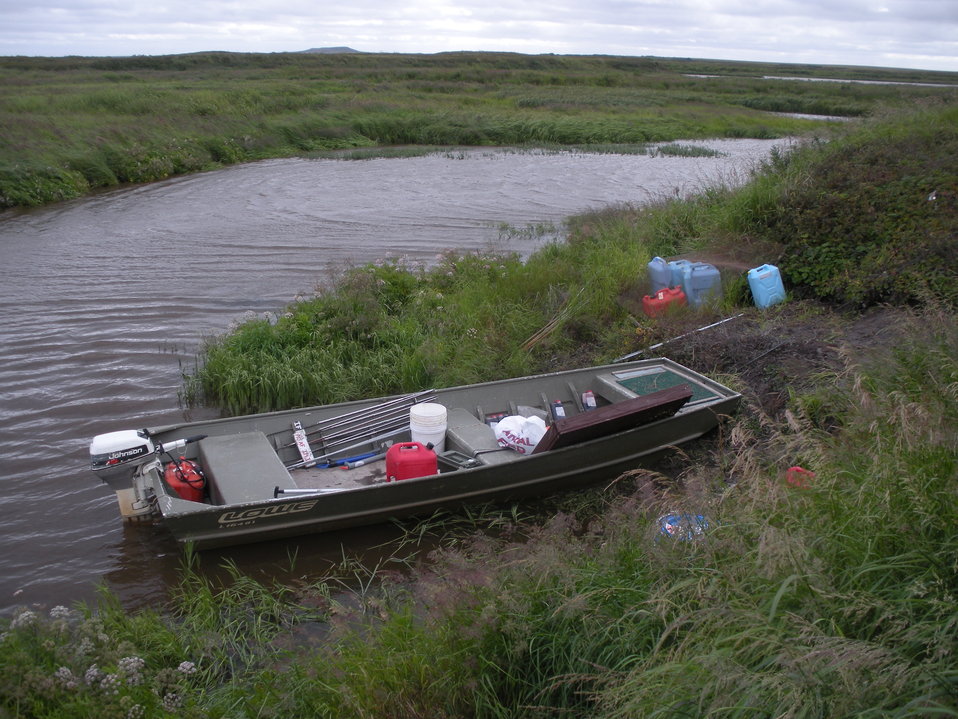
Boat travels

The pre-season duck banding camp is boat operated. The boat is used to set up and take down camp, and maneuver through the tight sloughs that lead to the trapping sites.

USFWS Yukon Delta NWR